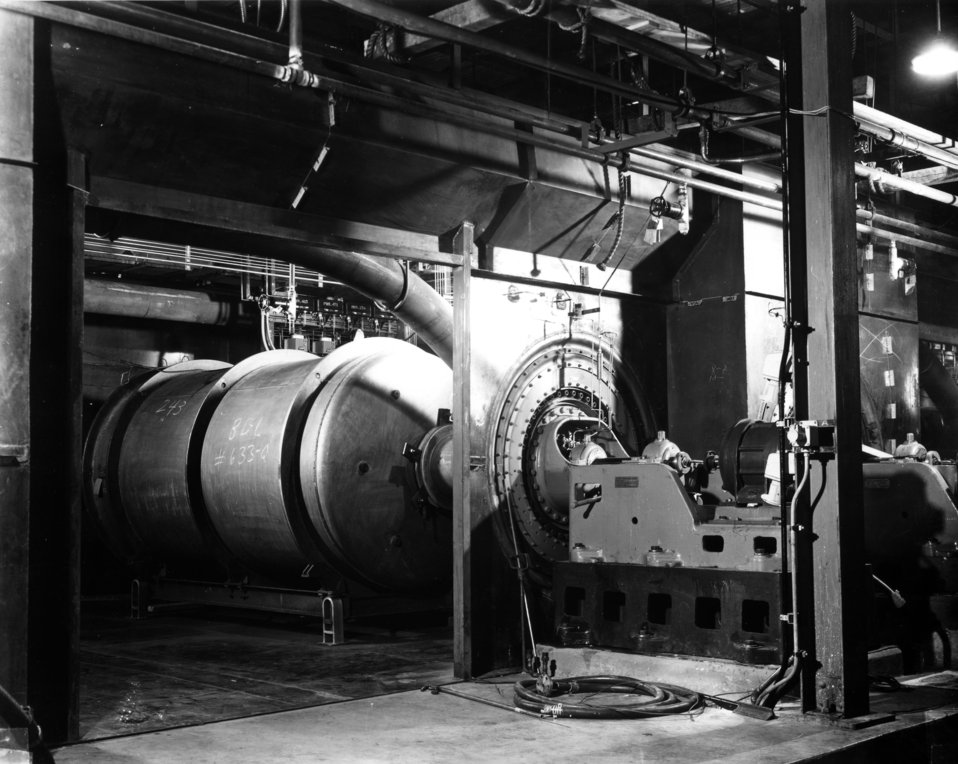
K-25 at Oak Ridge